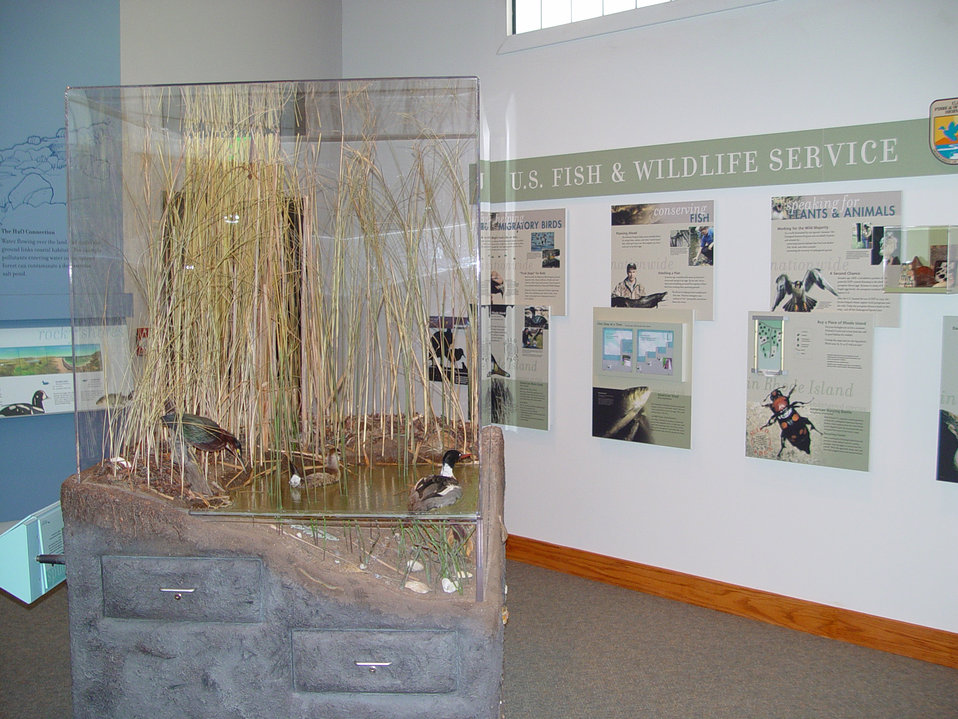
Kettle Pond Visitor Center in Charlestown, RI.